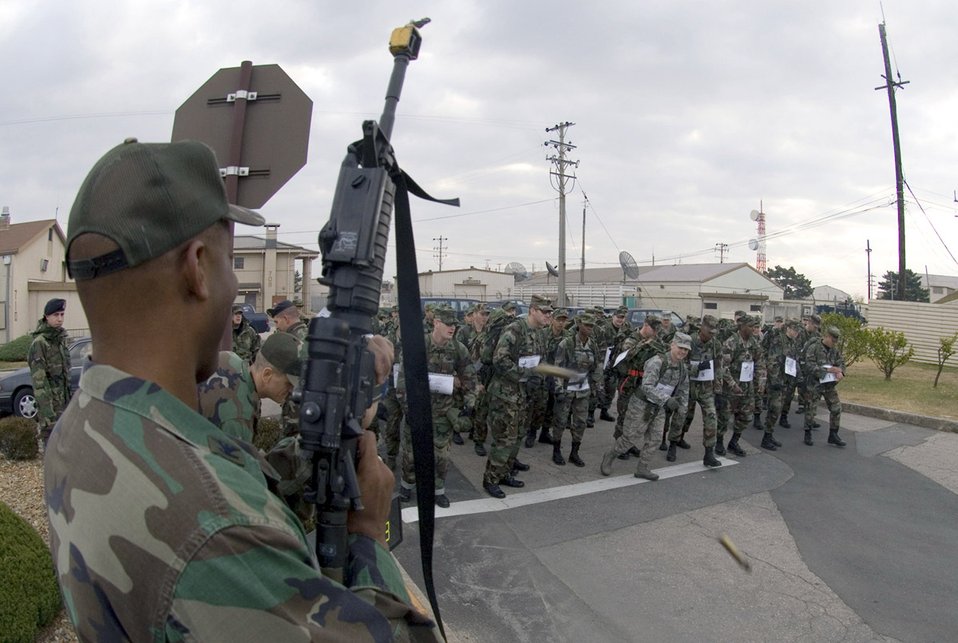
Running a ruck

Col. C.Q. Brown fires the starting gun for the first Veterans Day Memorial Ruck/Run held here Nov. 17 at Kunsan Air Base, Republic of Korea. Ten teams, each comprising four members, participated in the 10K march carrying 40-pound ruck sacks followed by a 1.5 mile run. Teams from the Republic of Korea air force joined U.S. teams from Kunsan and Osan air bases for the competition in an effort to build teamwork and camaraderie. Colonel Brown is the 8th Fighter Wing commander.